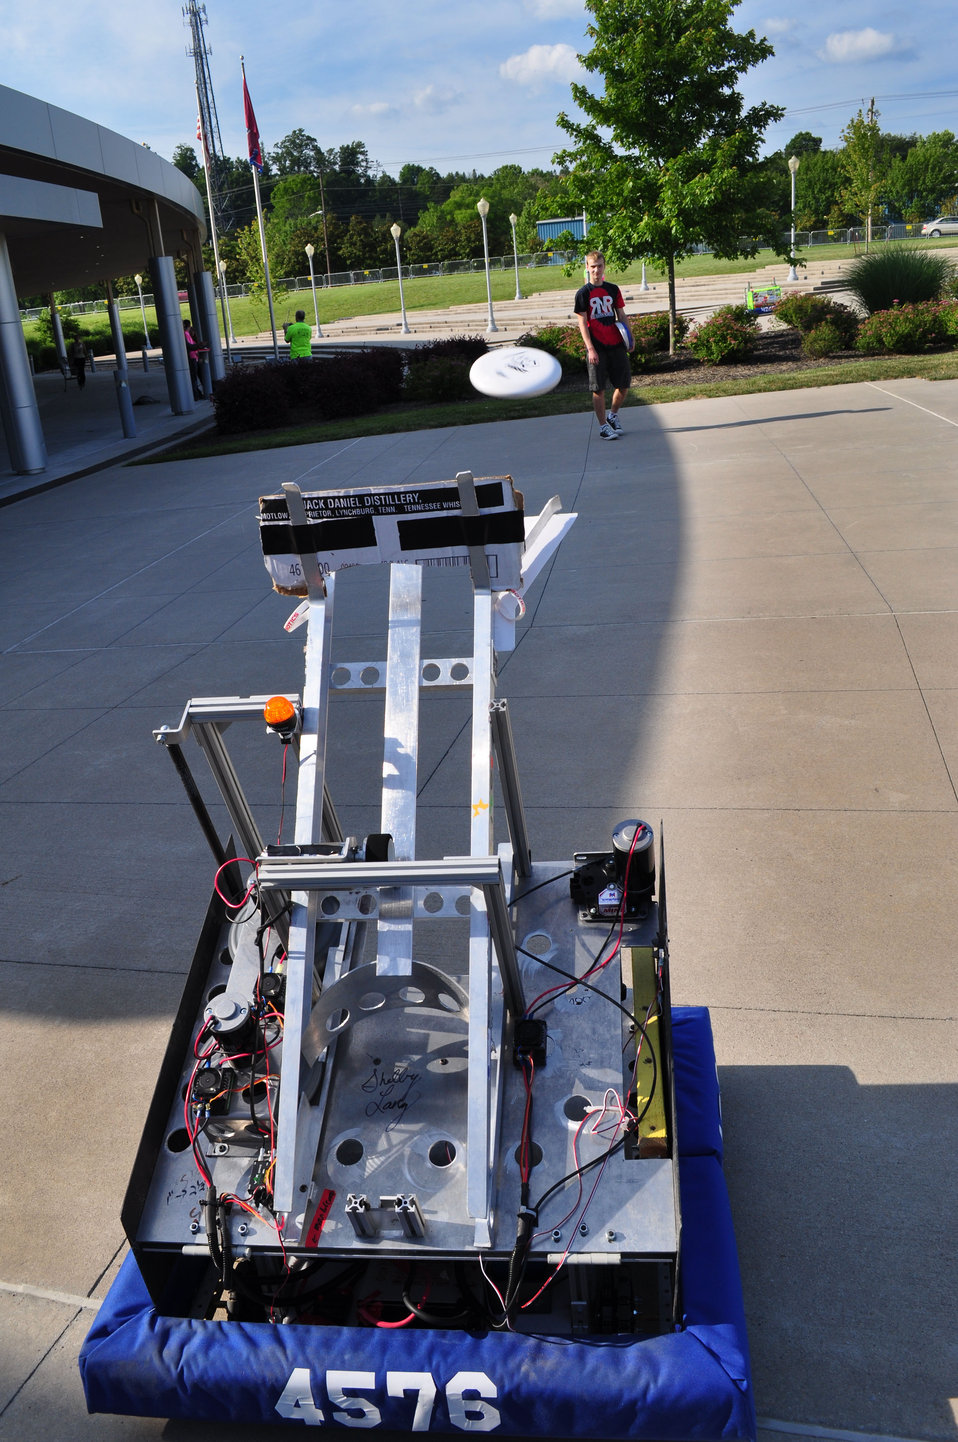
Tennessee Valley Corridor 2013 Oak Ridge

13-062 DOE photo Lynn Freeny 5-29-2013 Oak Ridge Tennessee